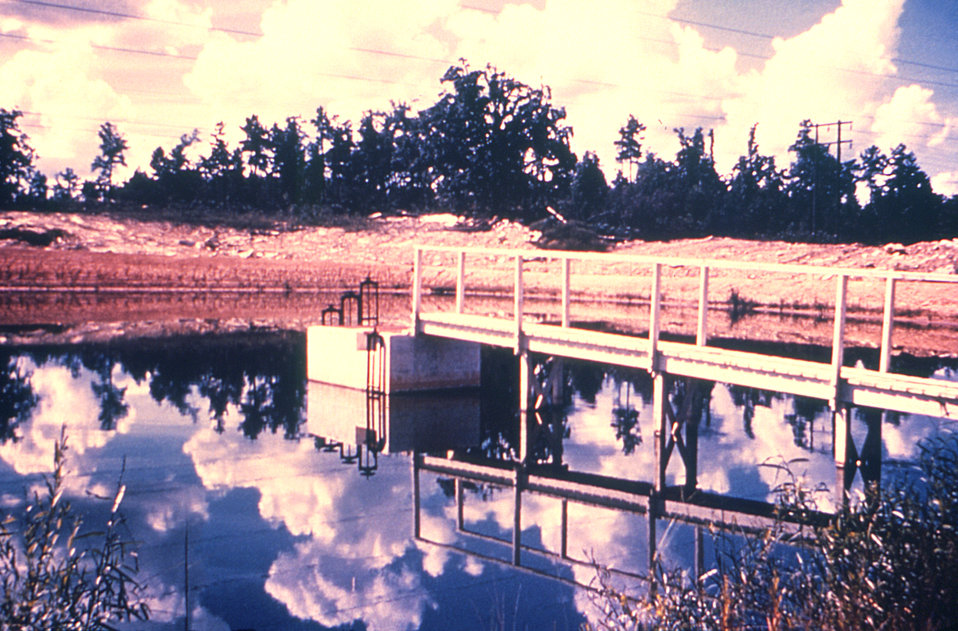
This 1976 photograph depicts an oxidation pond at a Georgian water treatment plant.